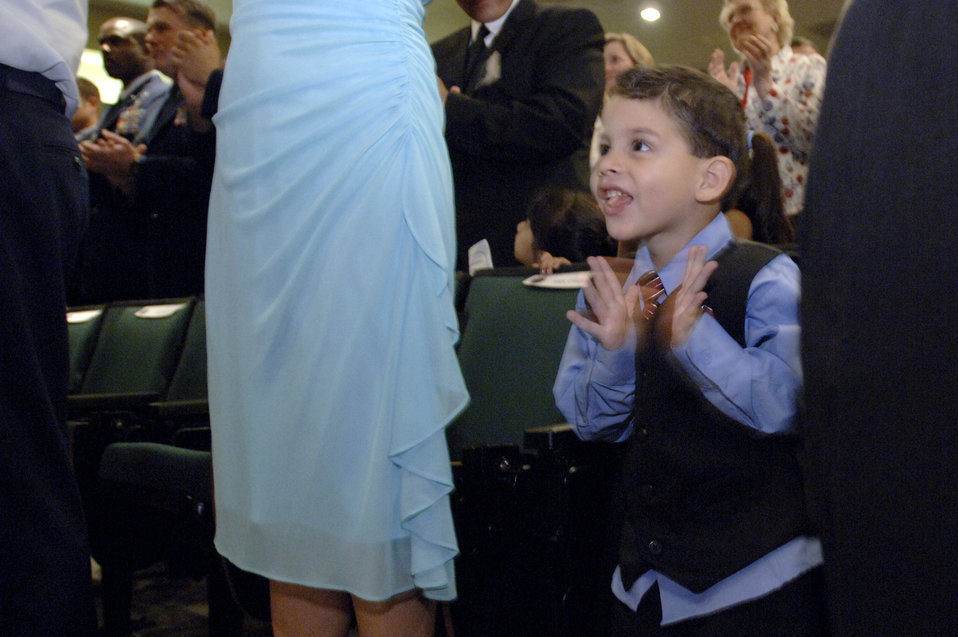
Purple Heart Presentation

Israel del Toro Jr. applauds his father, Staff Sgt. Israel del Toro, during the presentation of the Purple Heart Medal by Air Force Chief of Staff Gen. T. Michael Moseley today at Fort Sam Houston, Texas. Sergeant del Toro was wounded during combat action in Afghanistan in December 2005 while supporting Operation Enduring Freedom.